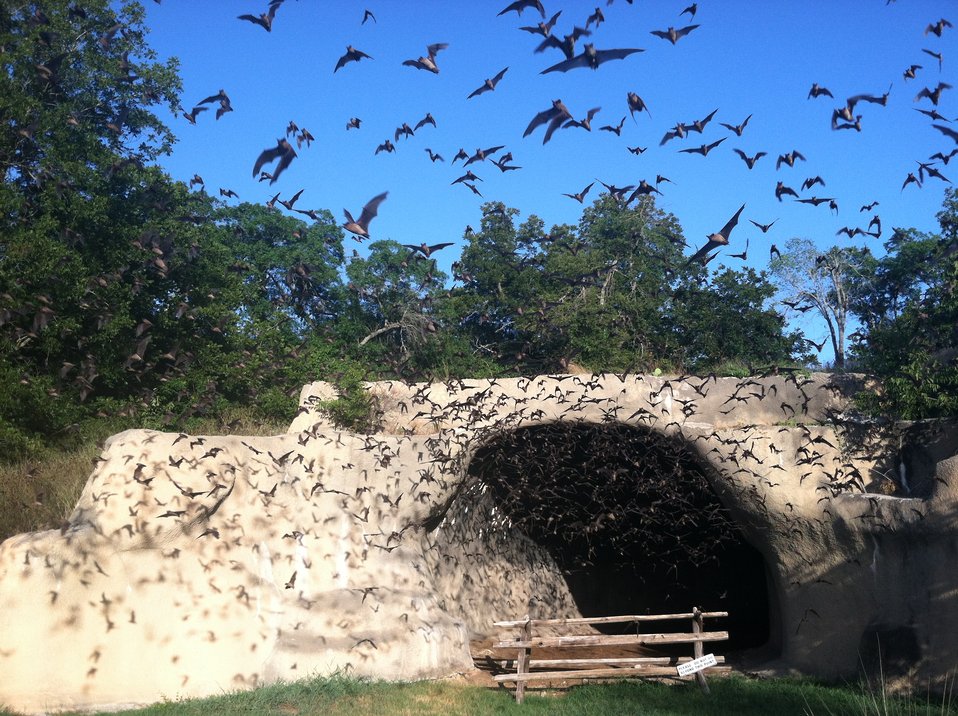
Bats emerging from Chiroptorium